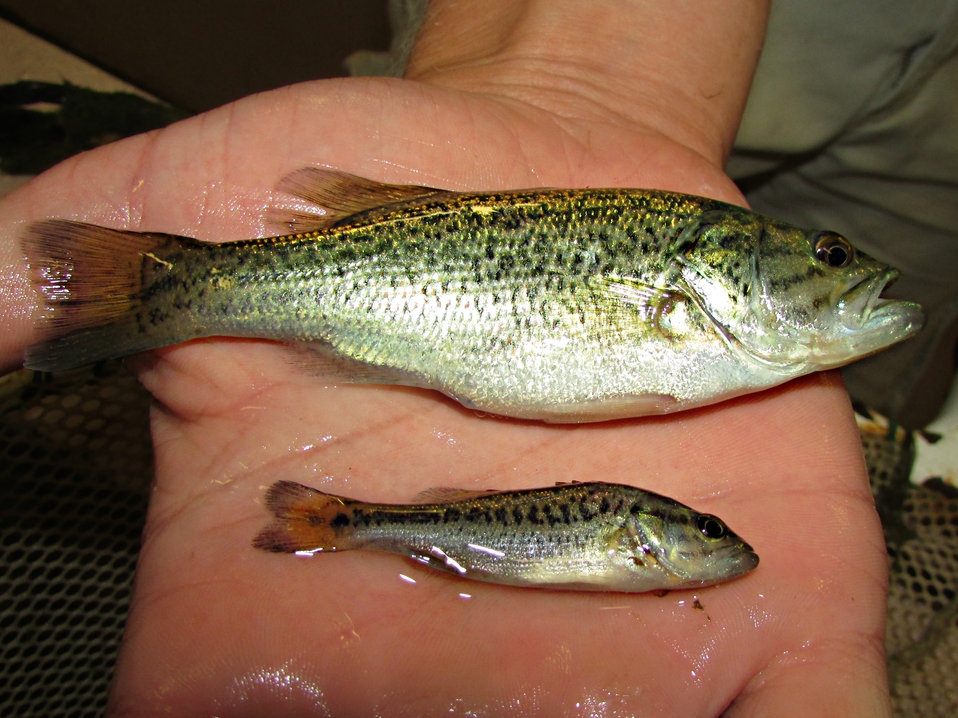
Largemouth Bass Fingerling

'It ain't easy being green.'

Yesterday we finished our largemouth bass harvest and they are on their way to Kansas as we speak!

Our bass typically aren't a uniformed size like other types of juvenile fish and this is because of cannibalism. This picture shows both ends of the extremes. Which one do you think has been eating its brothers and sisters?!